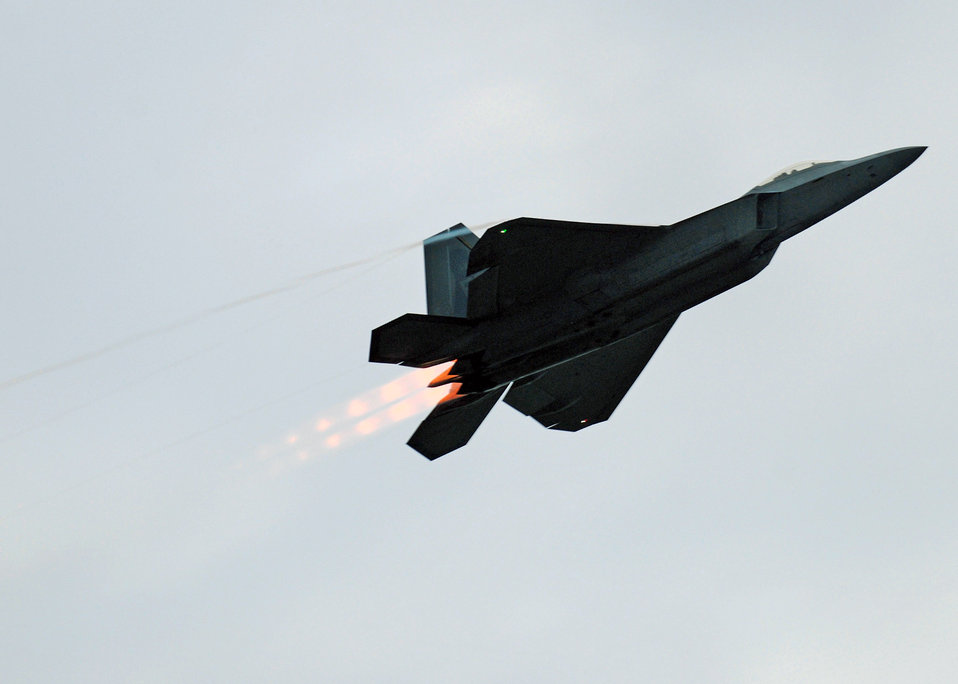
Freedom call

An F-22 Raptor performs a fly-by during the 4th annual Freedom's Call Tattoo June 27 on the grounds of the National Museum of the U.S. Air Force in Dayton, Ohio. More than 75,000 peole came out for the event that consisted of aircraft fly overs, food and music by the Air Force Band of Flight, Charlie Daniels Band and local performers. The F-22 is from Langley Air Force Base, Va.